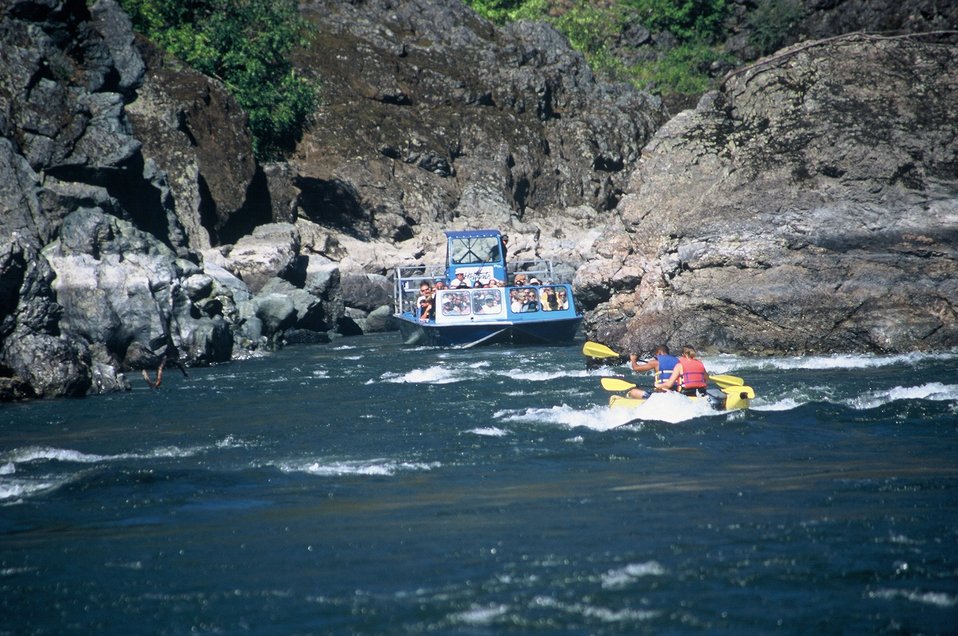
Jet boat at the entrance to Hellgate Canyon